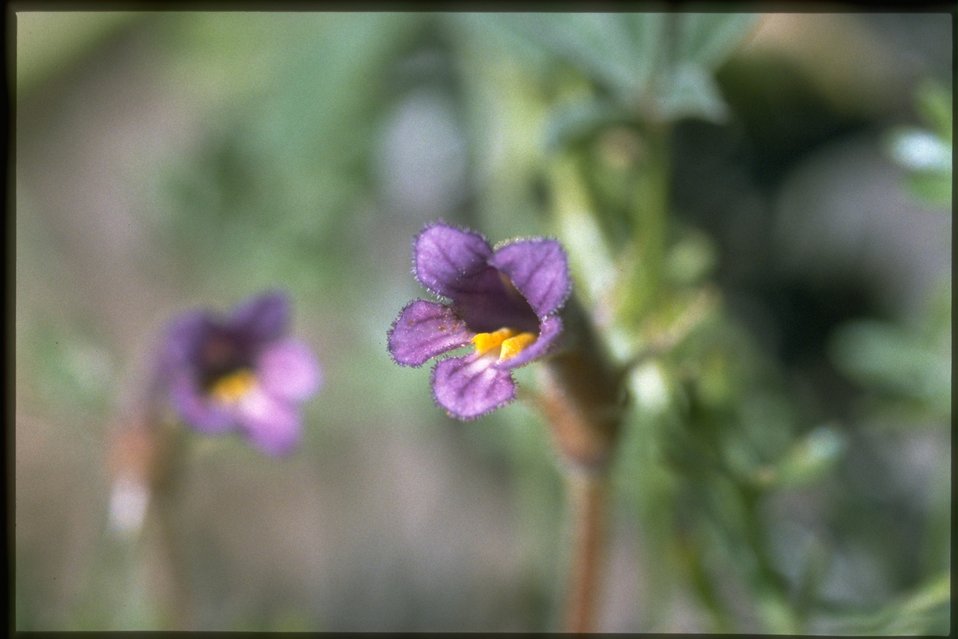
Closeup shot of Naked Broomrape wildflowers (Orobanche Uniflora).